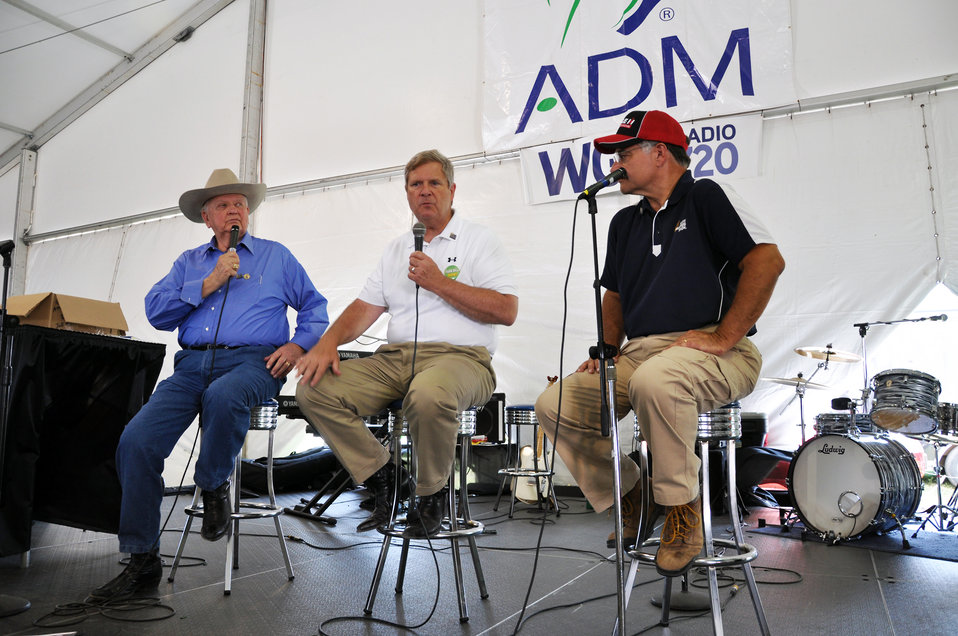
Agriculture Secretary Tom Vilsack (center) visits with Orion Samuelson (left) and Max Armstrong of WGN Radio during the 2012 Farm Progress Show in Boone, Iowa, on Aug. 30, 2012.